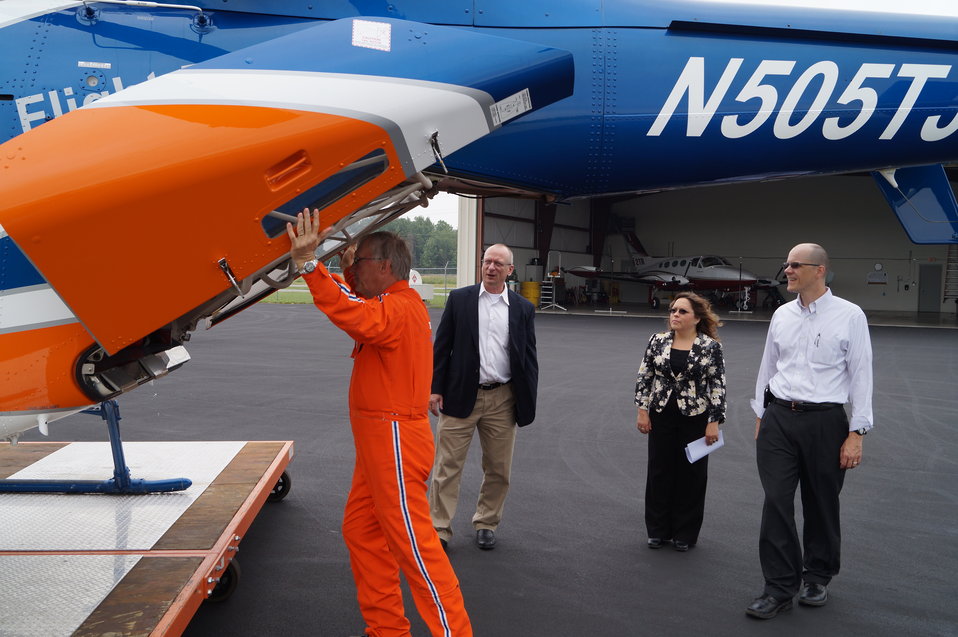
U.S. Department of Agriculture (USDA) Rural Development (RD) Acting Deputy Under Secretary Doug O’Brien (right), N.Y. State Director Stanley Lee Telega and USDA Area Specialist Dawn Kauras visit the new state-of-the-art Mercy Flight Helicopter. Mercy Flight offers emergency services to rural residents throughout Western New York. In 2011, Rural Development provided the organization with funding for the new equipment.